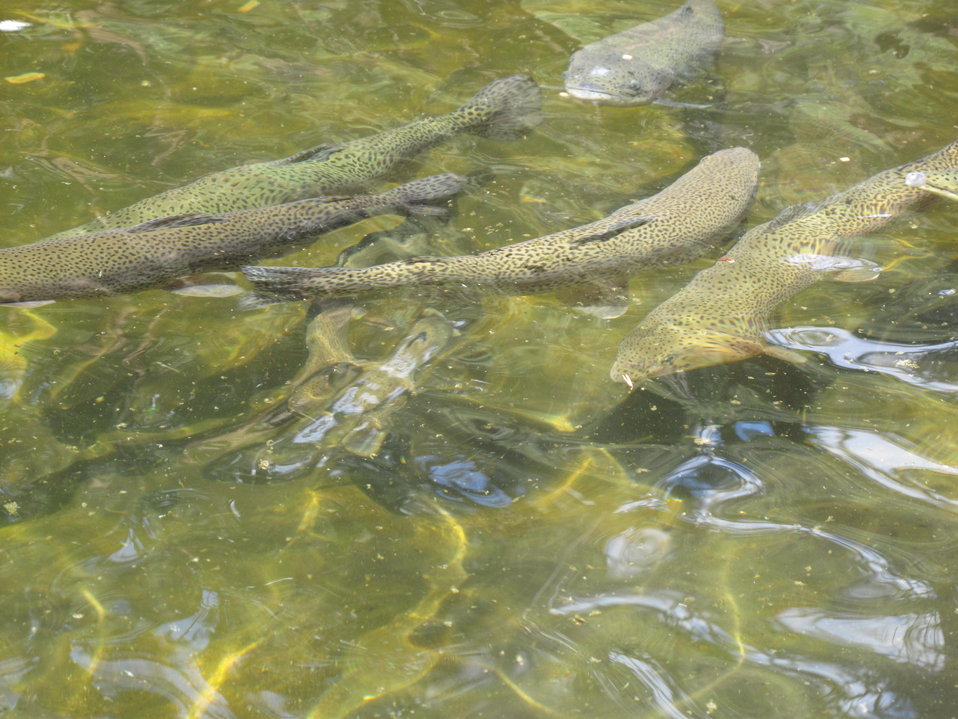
Trout at Leadville